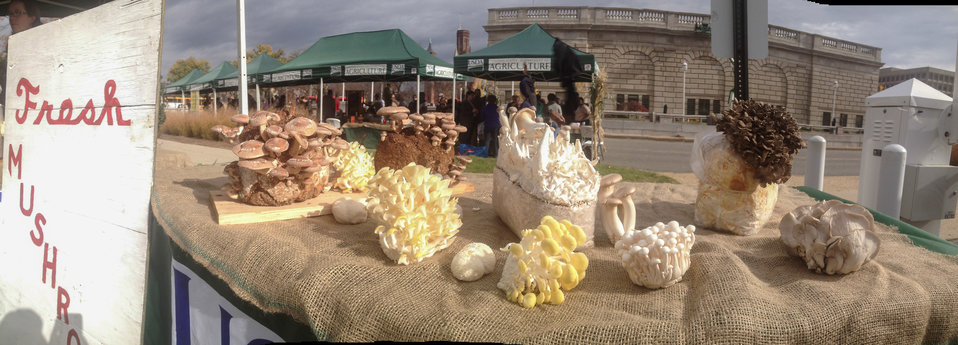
A virtual panorama of shitake mushrooms growing on sawdust and cereal log, yellow oyster (yellow and white), pom pom (egg shaped), beach (small cap), royal trumpet (large stem), maitake (dark brown on plastic wrapped growing log, and oyster (light gray) mushrooms Yellow oyster (yellow and white), pom pom (egg shaped), beach (small cap), royal trumpet (large stem), maitake (dark brown on plastic wrapped growing log, and oyster (light gray) mushrooms on display at the U.S. Department of Agriculture (USDA) farmers markets and Harvest Festival at the USDA Whitten Building east parking lot in Washington, DC, on Friday, November 22, 2013.